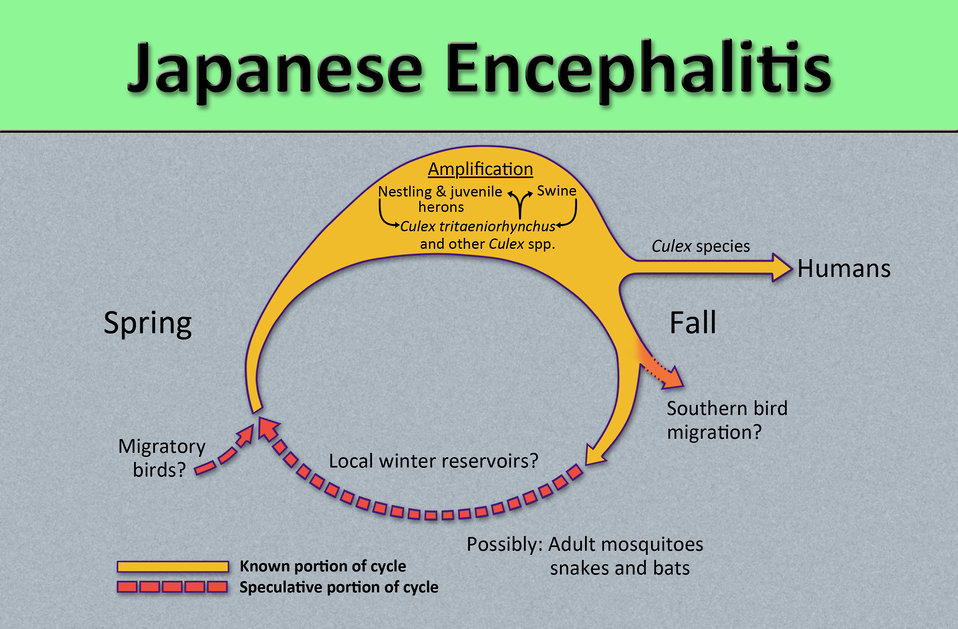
This diagram illustrates the methods by which the arbovirus, Japanese encephalitis virus (JEV) reproduces and amplifies itself in the avian populations, and is subsequently transmitted to human beings as the dead end host.